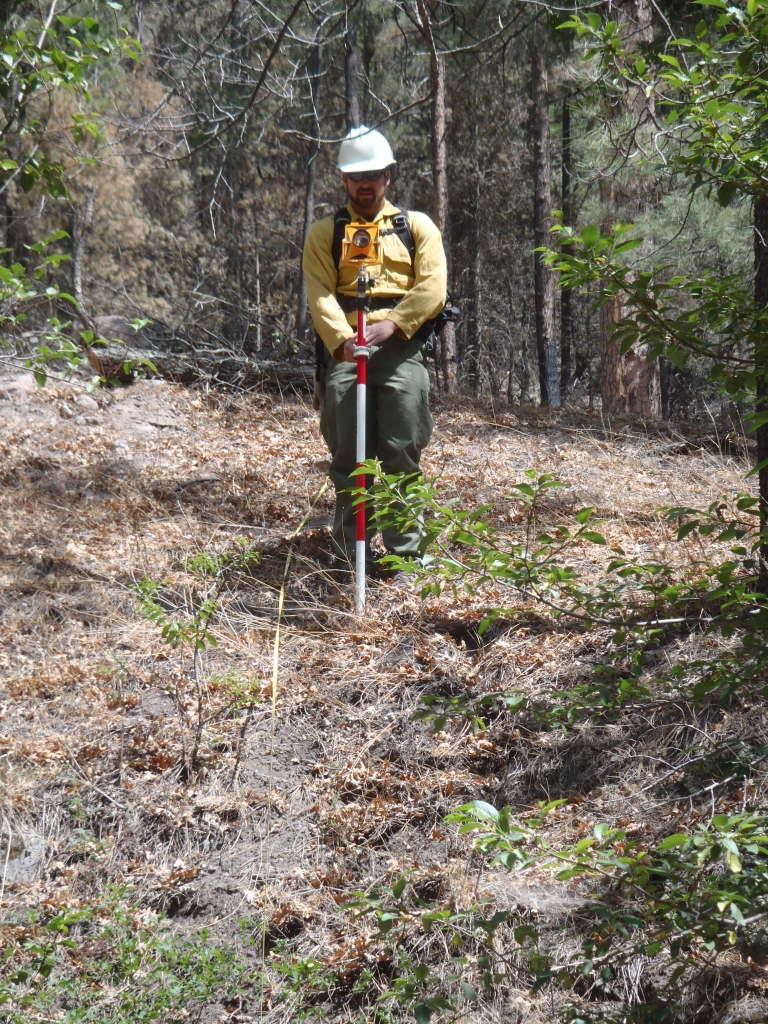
Burned Area Emergency Response (BAER) team hydrologist measures a cross section of Gallinas Creek in Gila National Forest near Kingston, NM. The Silver Post Fire response has the Burned Area Emergency Response (BAER) team beginning operations to seed acres of high burn severity and to mulch additional acres. Seeding reduces effects to downstream life, property, and infrastructure by reducing erosion and runoff. Areas of high burn severity are to be seeded with a quick germinating, non-persistent annual cereal barley that would provide rapid ground cover. A small percentage of native perennial species would also be included to give the burned area a jump start in natural recovery, and provide for long-term ground cover. Mulch is the most effective treatment for controlling erosion and runoff, as it provides immediate ground cover. Mulch also assists in stabilizing soil in and around these areas.